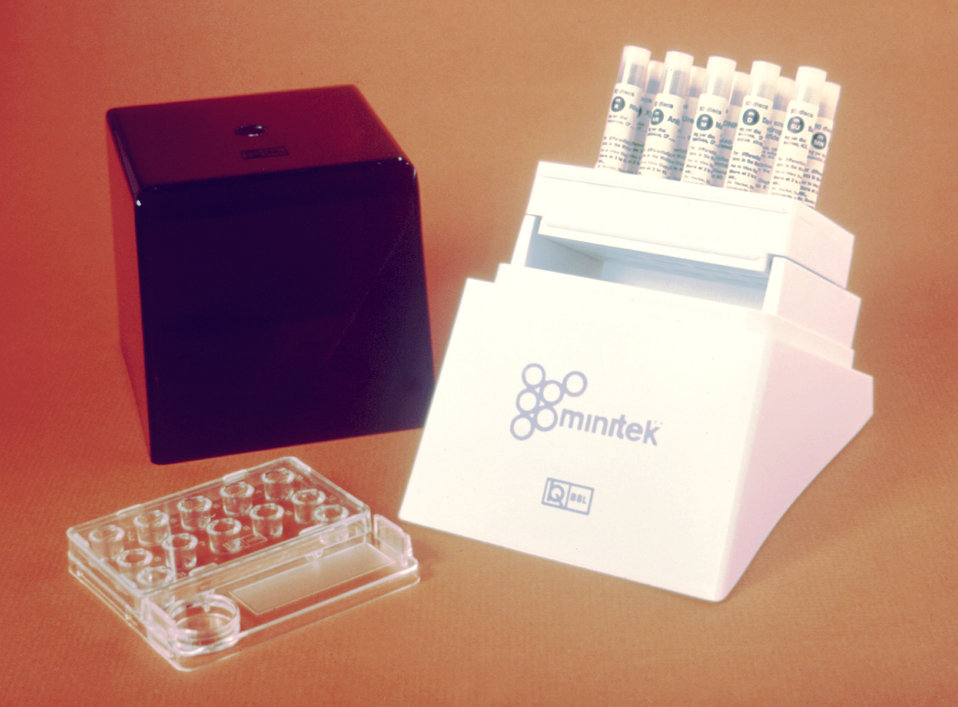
The Minitek� System consists of disposable well plates that are used to hold disks impregnated with biochemical substrates.